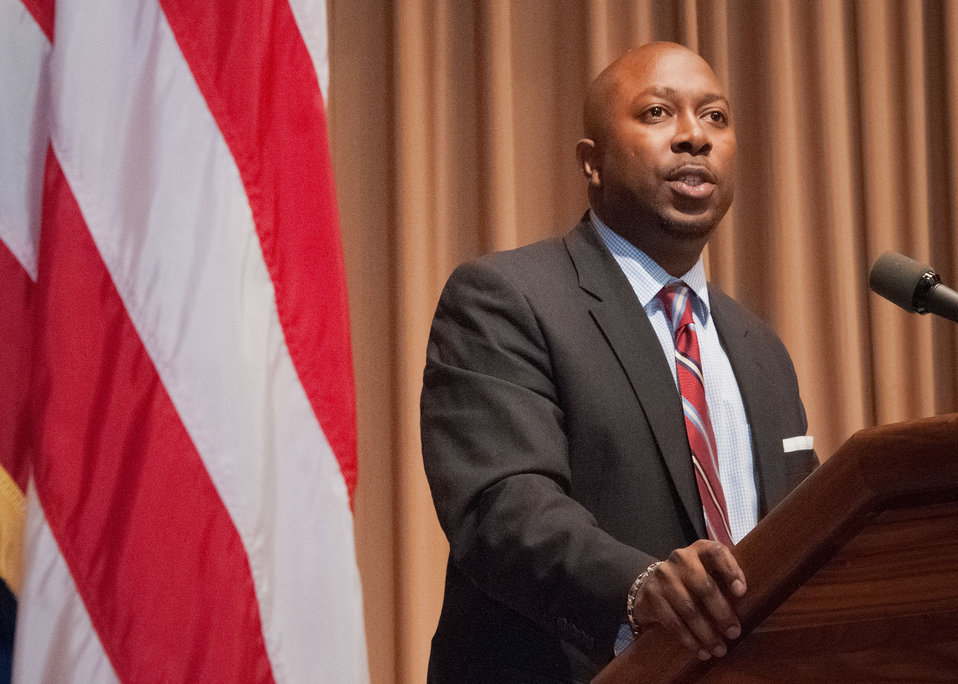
Agriculture Deputy Under Secretary, Farm and Foreign Agricultural Services(FFAS) and past member of the Marine Corps Reserve Karis Gutter introduces the keynote speaker U.S. Air Force Major General Commander, Air Force District of Washington, Joint Base Andrews, MD Sharon K.G. Dunbar at the U.S. Department of Agriculture Veterans Day Observance: Honoring All Who Served, in Washington, D.C. Wednesday, Nov. 7, 2012.